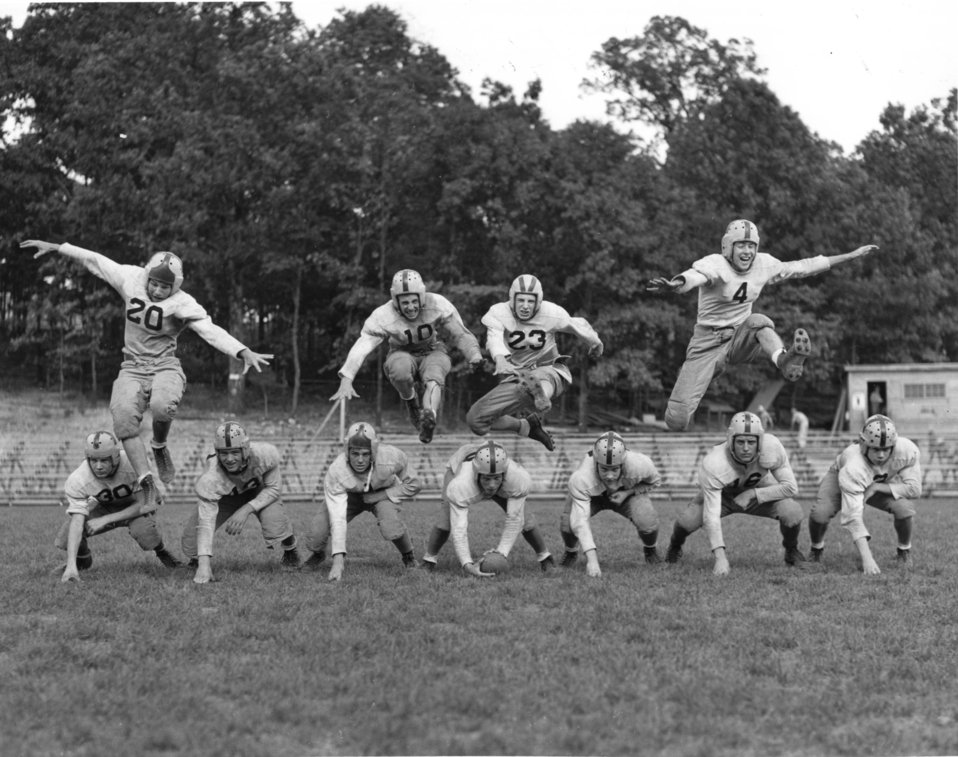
Schools at Oak Ridge